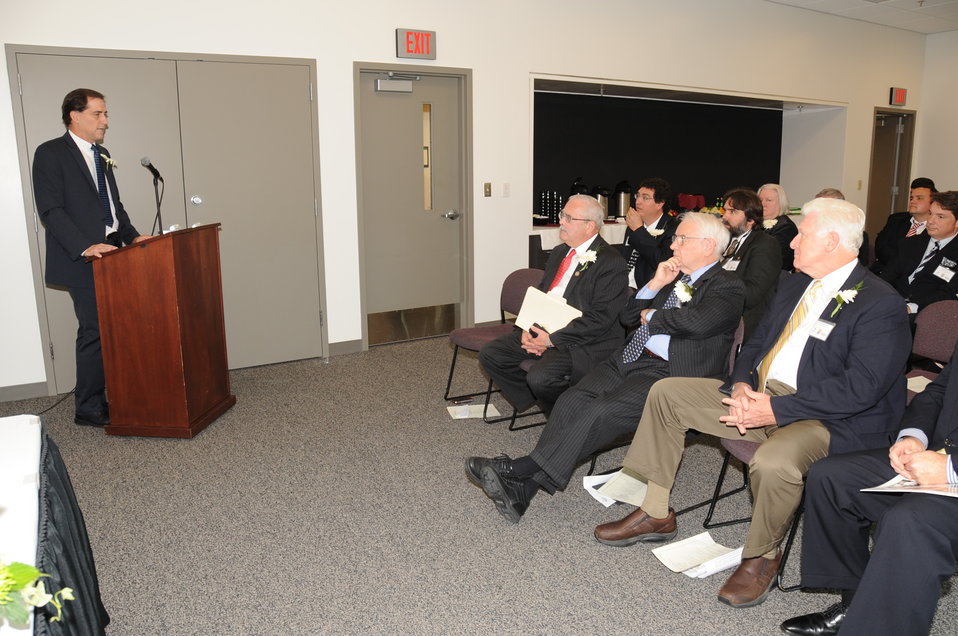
Together in Conservation

Memorandum of Understanding Signing Ceremony with U.S. Fish and Wildlife Service, Smithsonian Institution, and George Mason University. October 26, 2012